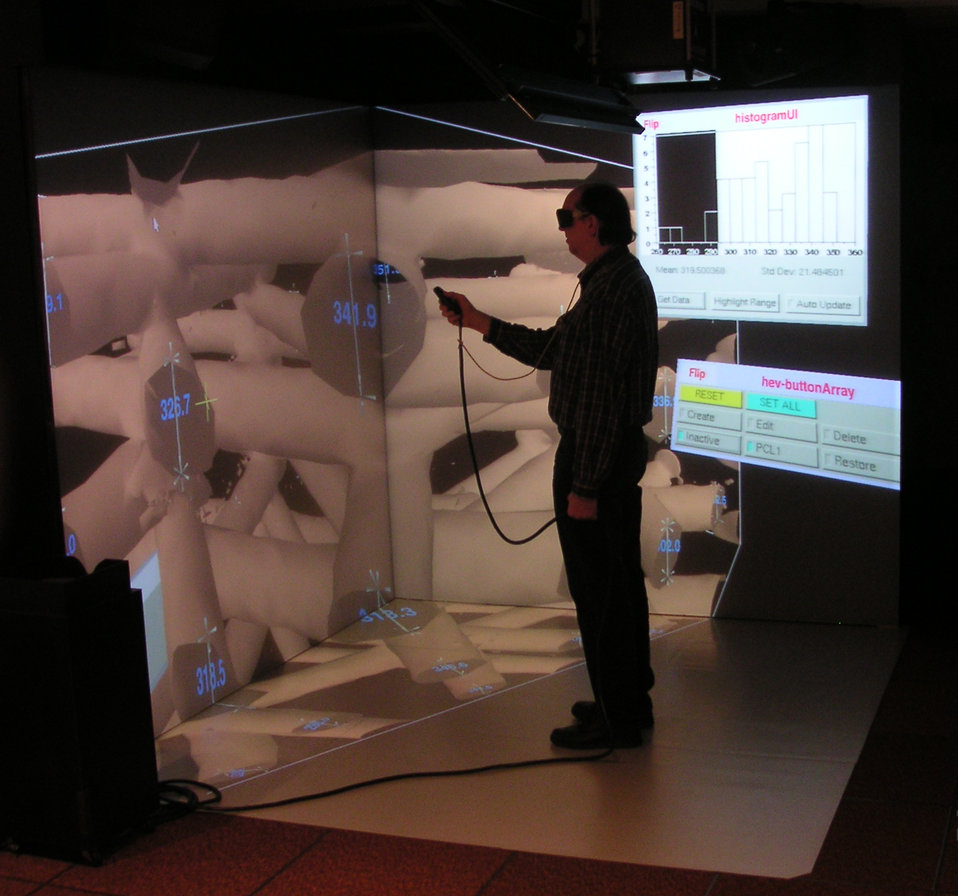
Immersive environment; 3D

Researcher Bill George is in the immersive environment with the corrected location and orientation measurements, measuring an enlarged version of the engineered lattice structure that is about 2 to 3 millimeters. NIST-developed software greatly increased the accuracy of the immersive environment by correcting the tracking of the location and orientation of the sensors attached to the 3D glasses and the wand that George holds in his hands.